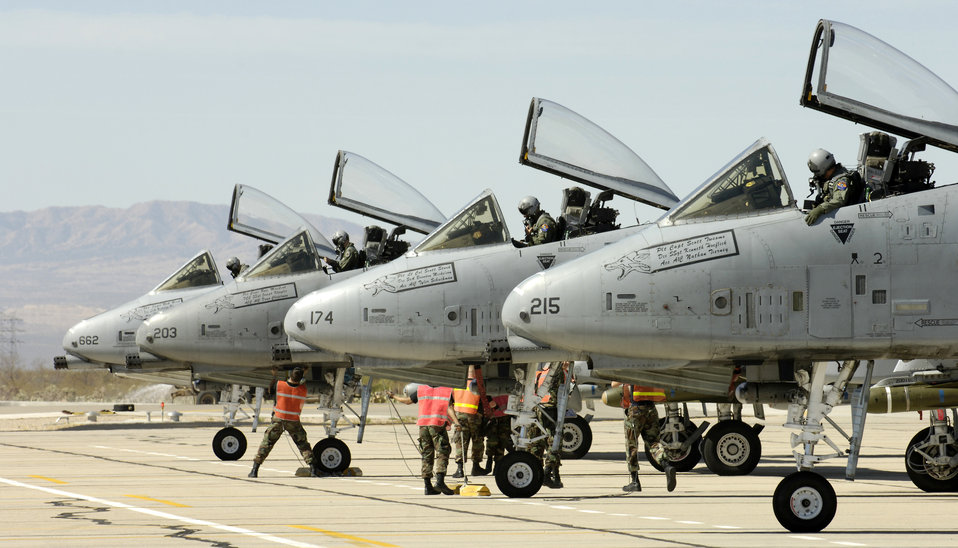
Thunder alley

Four A-10 Thunderbolt IIs sit on the end of the runway as maintainers perform pre-flight inspections at Davis-Monthan Air Force Base, Ariz., Thursday, March 23, 2006, as part of the 2006 Hawgsmoke competition. This year marks the 30th anniversary of the